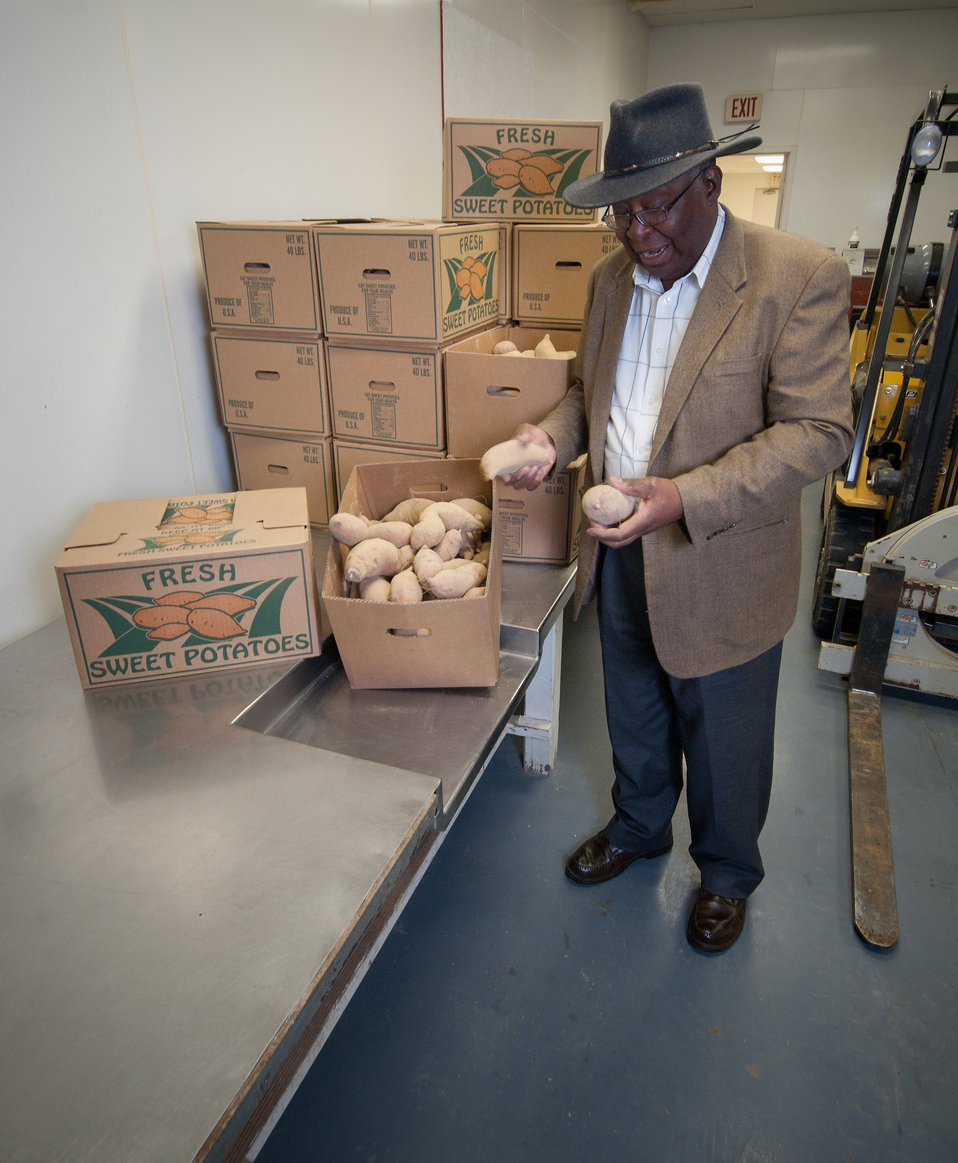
Agriculture Demonstration Outreach Center coordinator Theodore Eldridge checks sweet potatoes packaged at the University of Arkansas at Pine Bluff, Agriculture Demonstration Outreach Center in Marianna, AR on Mar. 5, 2013. The Arkansas Delta Seeds of Change (ADSOC) was able to purchase production equipment with a U.S. Department of Agriculture (USDA) Rural Development (RD) Rural Business Enterprise Grant (RBEG). USDA in partnership Heifer International (an International organization whose mission is to work with communities to end hunger and poverty and care for the Earth) and various for-profit and non-profit organizations have put in motion the “Seeds of Change Implementation Plan” to use sustainable agriculture to build food systems in the Arkansas Delta. The program has evolved into the ADSOC Initiative. The ADSOC Initiative assists producers with technical assistance for crop production, management, harvesting, food security, value added products and marketing options and provides access to specialized production and marketing equipment.